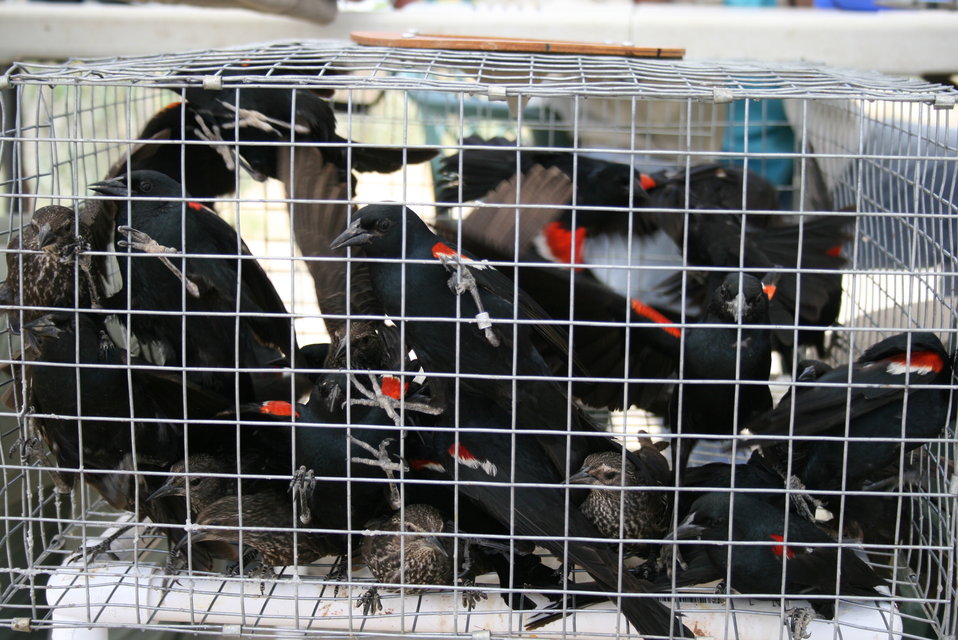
Tricolored Blackbirds in a transport cage

Male and female Tricolored Blackbirds (Agelaius tricolor) wait to be banded in a transport cage.